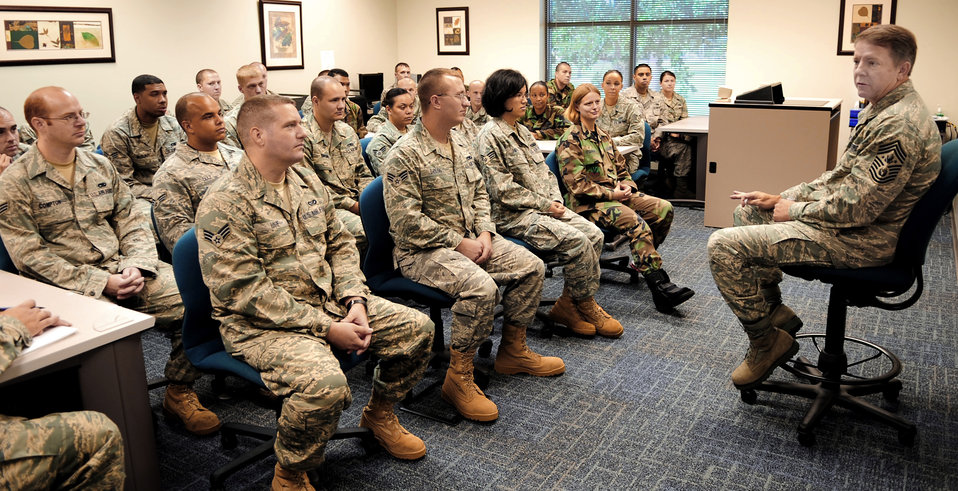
CMSAF visits Seymour Johnson

Chief Master Sgt. of the Air Force Rodney McKinley discusses uniform changes, new physical training requirements and being the highest ranking enlisted official to Airmen attending Airman Leadership School at Seymour Johnson Air Force Base June 12. Chief McKinley told the class his only goal was to be the best Airman he could.